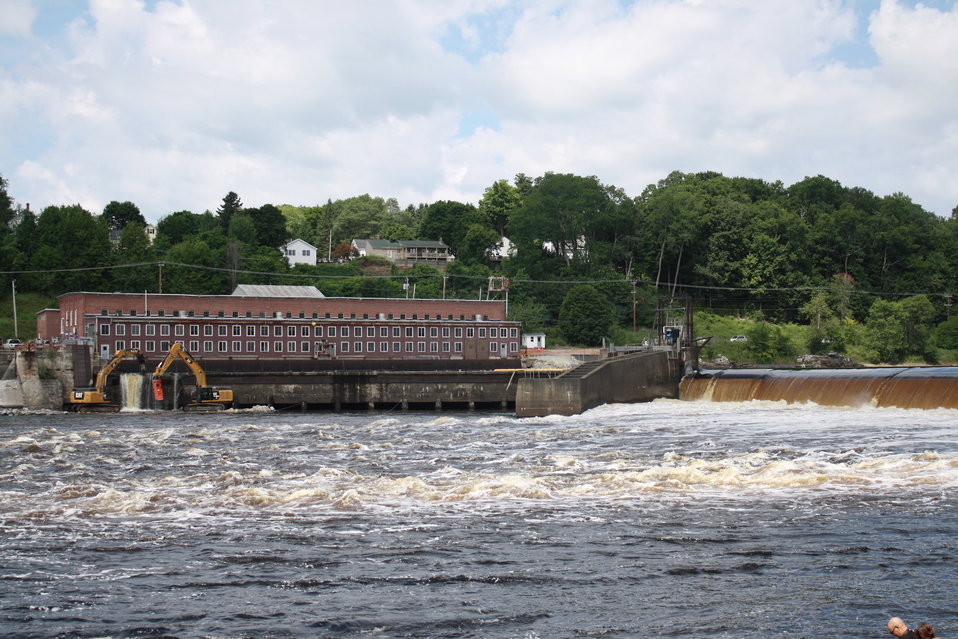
Veazie Dam Removal

The Veazie Dam, the lowermost dam on the Penobscot River, has blocked Atlantic salmon, American shad, shortnose sturgeon, and eight other sea-run fish from reaching their spawning and juvenile growing habitat for nearly two centuries. Veazie will be the second dam removed in this monumental endeavor.